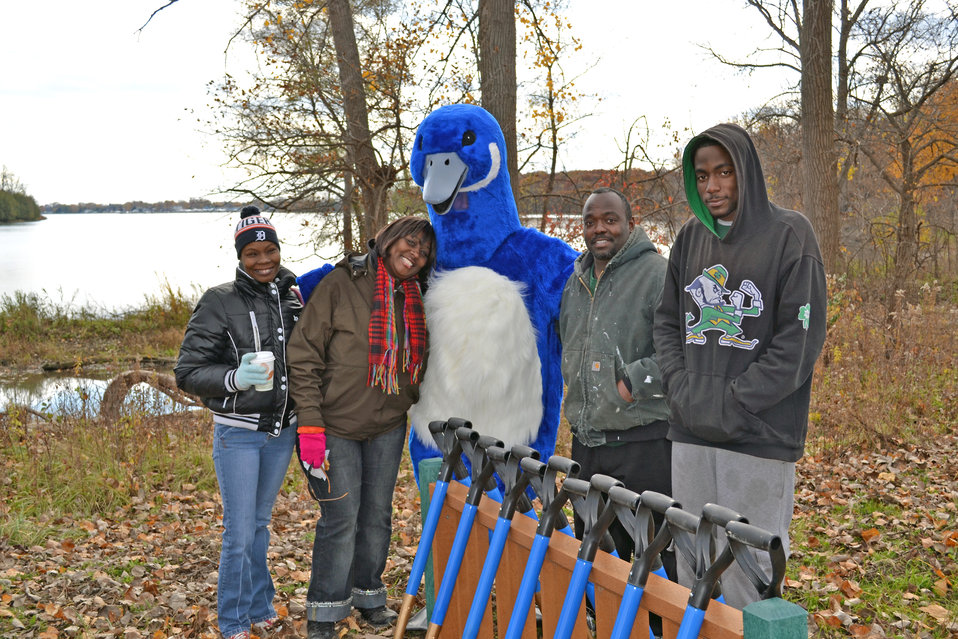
Greening of Detroit

Adult participants from Greening of Detroit came out for the celebration at Detroit River International Wildlife Refuge.